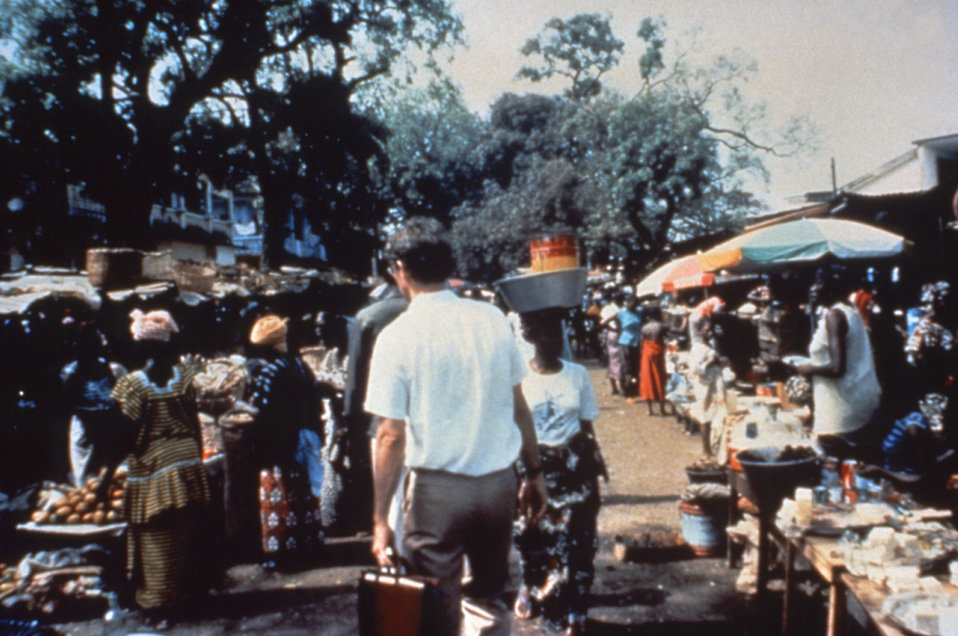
This photograph shows an Epidemic Intelligence Service (EIS) officer walking through a market of a disease stricken country.